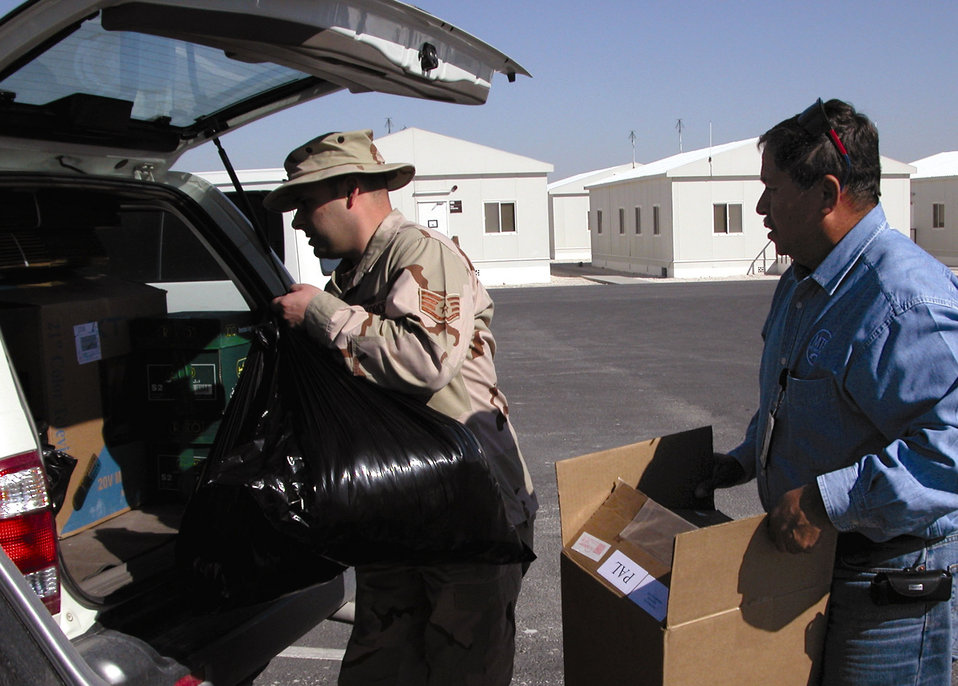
Deployed troops send relief to Southeast Asia survivors

SOUTHWEST ASIA -- Staff Sgt. Shane Sullivan helps Miguel Laboy load clothes and toiletry items into a vehicle. Mr. Laboy is a base communications contractor who is working with Sri Lankan Embassy officials to fly relief supplies to Sri Lanka. Sergeant Sullivan works in the military equal opportunity office at a forward-deployed location here.